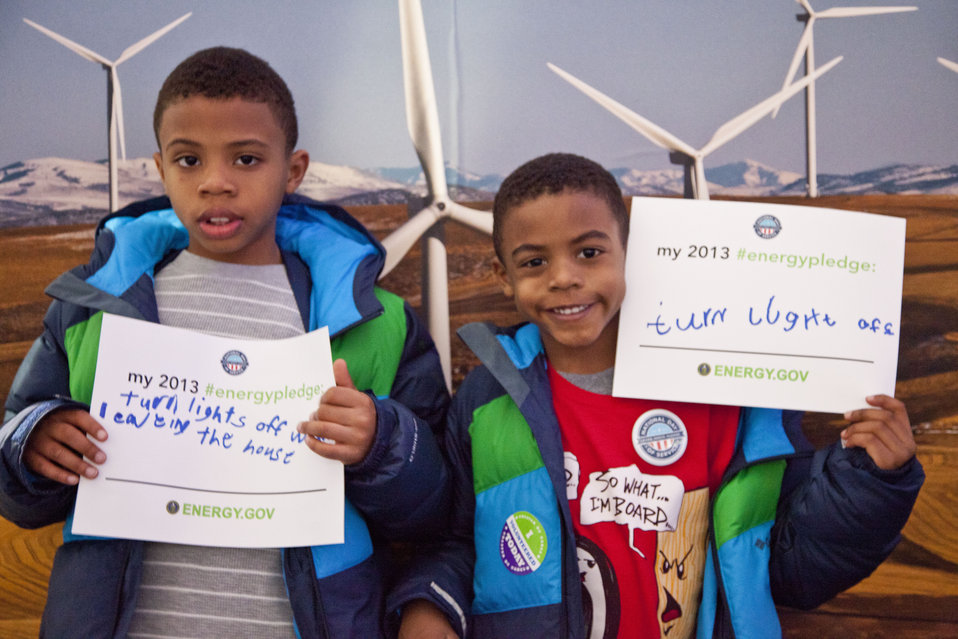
What's your #energypledge?